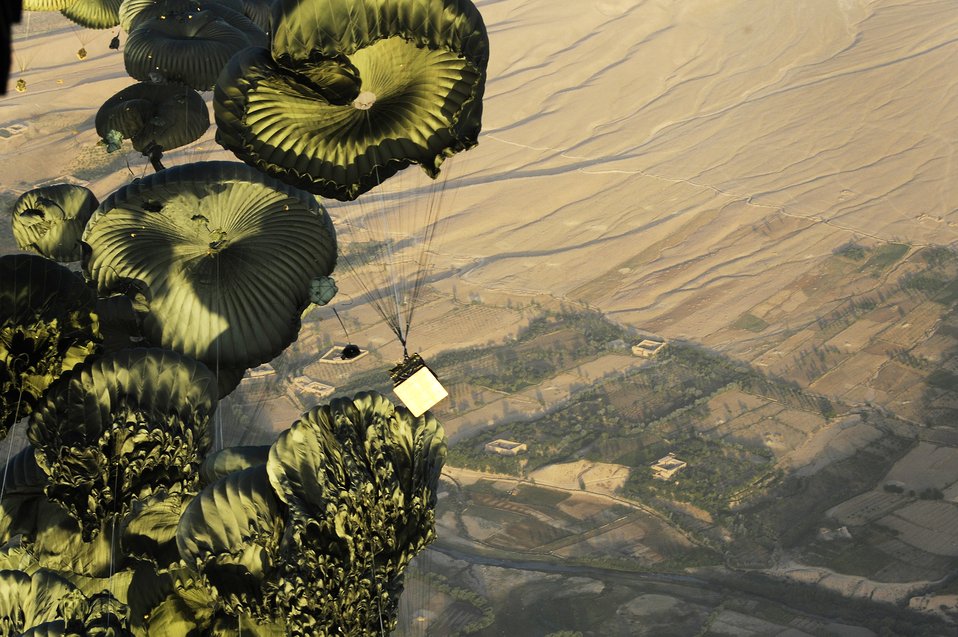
Supply drop in Afghanistan

Pallets of cargo drop from a C-17 Globemaster III to a forward operating base in Afghanistan, Aug. 27, 2009, in support of Operation Enduring Freedom. The aircraft is assigned to the 817th Expeditionary Airlift Squadron.